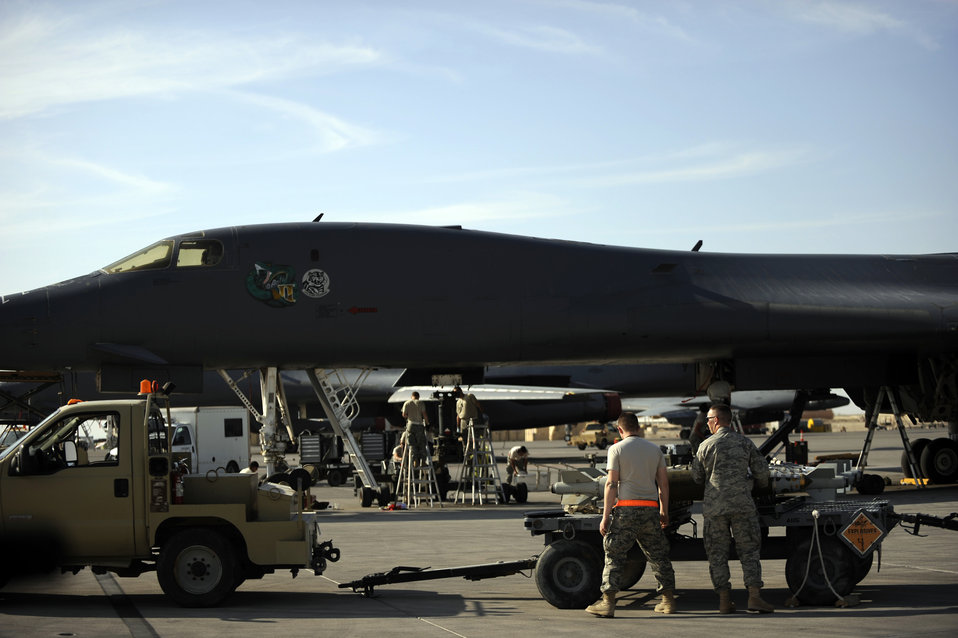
Operation Enduring Freedom

Airmen load bombs on a B-1B Lancer Jan. 23, 2010, at an air base in Southwest Asia. The Airmen are assigned to the 37th Aircraft Maintenance Unit.